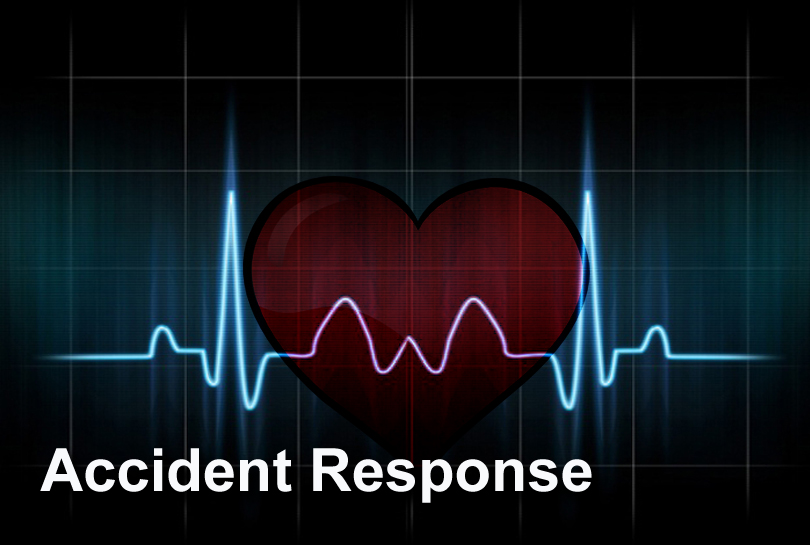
Air Guard responds to accident